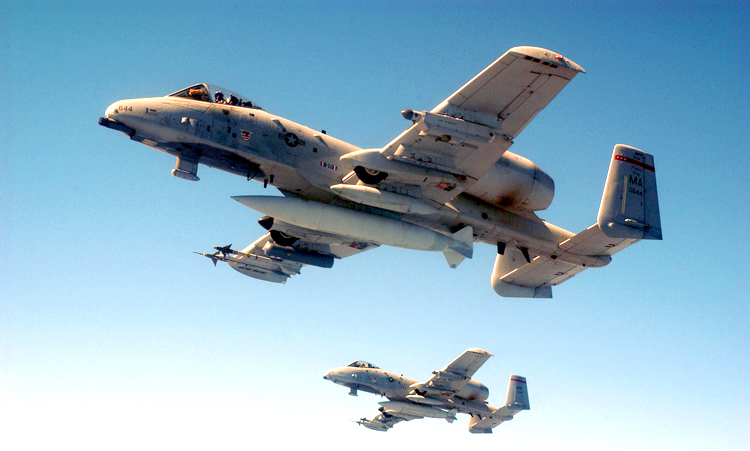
Thunderbolt pair

SOUTHWEST ASIA -- A-10 Thunderbolt IIs fly over the desert with LITENING, a precision targeting pod system. The pod, externally mounted to the aircraft, is equipped with a laser designator for precise delivery of laser-guided munitions and a laser rangefinder that provides information for various avionics systems.